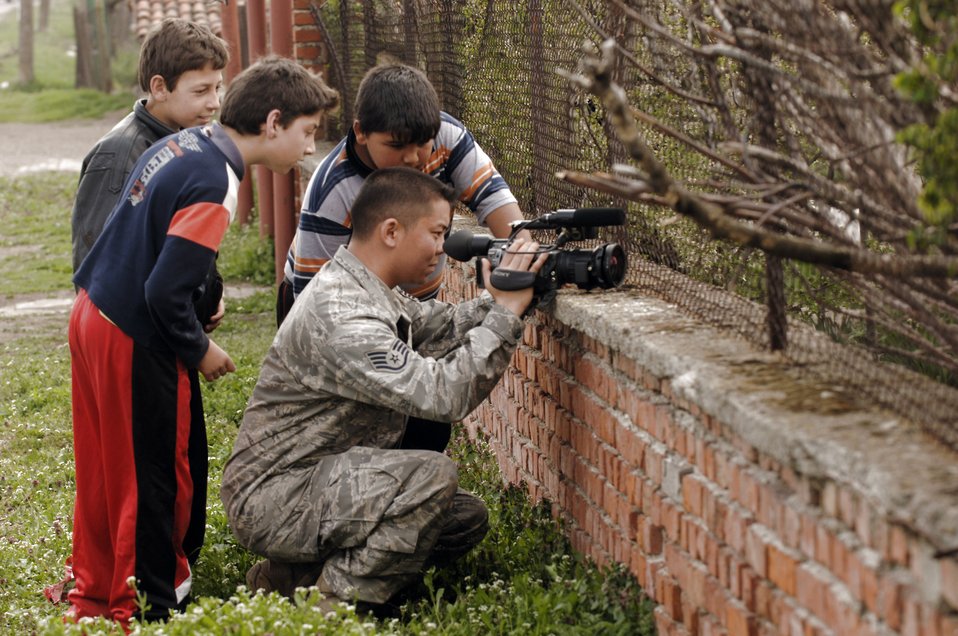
Look through here...

Boys from the village of Bezmer, Bulgaria watch Staff Sgt. Jason David shoot footage outside Bezmer Air Base where U.S. and Bulgarian forces participate in Thracian Spring 2008, an annual bilateral training exercise. Sergeant David is deployed from Ramstein Air Base, Germany.